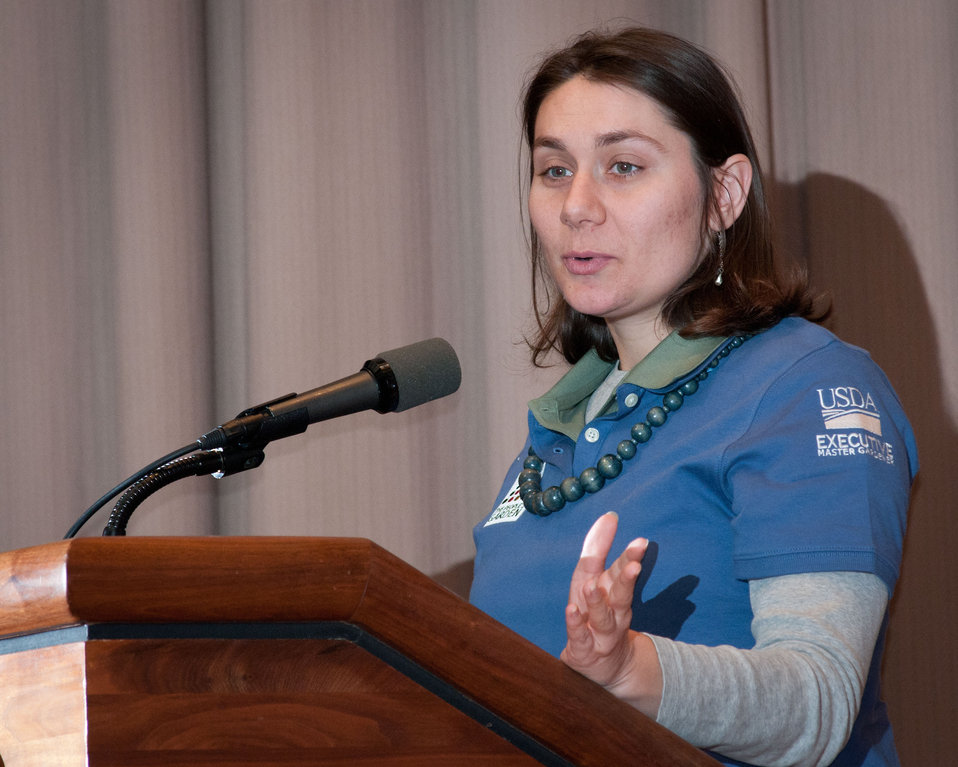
Graduation day of the 2011 U.S. Department of Agriculture (USDA) Executive Master Gardeners, on Tuesday, November 8, 2011 in Washington, DC. During the past six-weeks, students contributed 40-hours of volunteer time, completed studies and testing to receive their certificates today as an Executive Master Gardener. Many of the sessions occurred before work hours, during lunchtime or at community garden project sites such as Powell Middle School. USDA challenges its employees to establish People's Gardens at USDA facilities worldwide or in community gardens. People's Gardens vary in size and type, but all have a common purpose - to help the community and the environment. To learn about the People’s Garden Initiative visit www.usda.gov/wps/portal/usda/usdahome?contentid=peoples g....